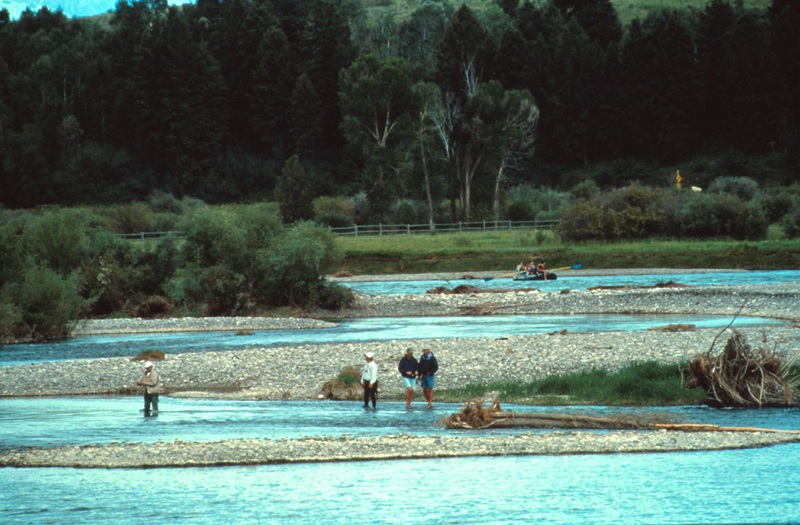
South Fork of the Snake River